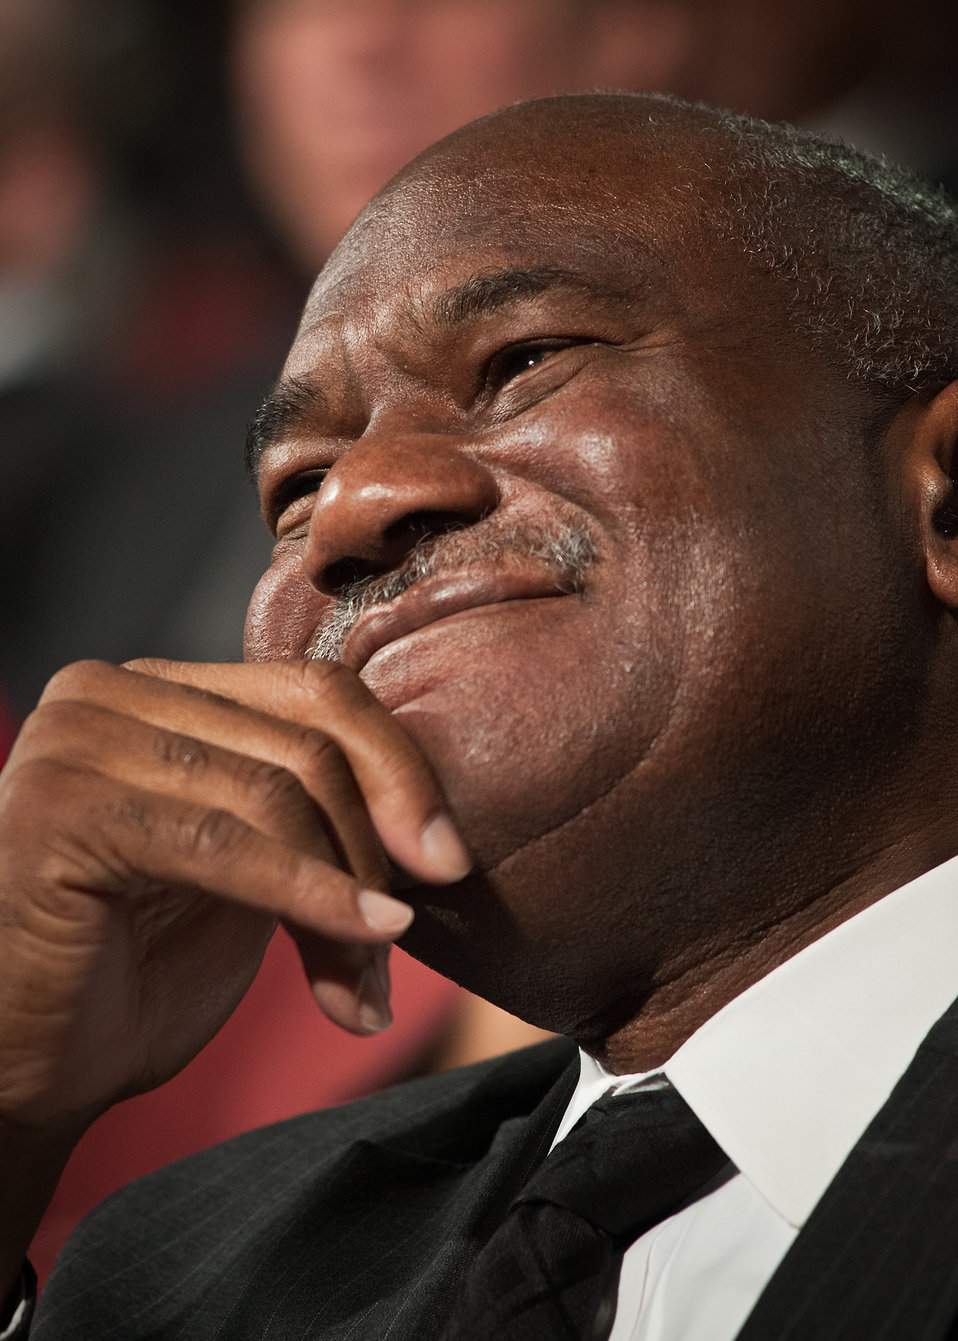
Pearlie Reed, Assistant Secretary for Administration listens Dr. William R. Harvey, President, Hampton University, Hampton, Virginia addresses employees and visitors on Dr. Martin Luther King’s life and lessons during the National Service Day and Martin Luther King Celebration in honor of Dr. Martin Luther King Jr.’s contributions to the Civil Rights Movement at the United States Department of Agriculture in Washington, D.C., Thursday, January 12, 2012. Dr. Harvey spoke of Dr. King’s life and struggles and how we as citizens can use those lessons to improve our lives and the lives of others by the simple act of service to others.